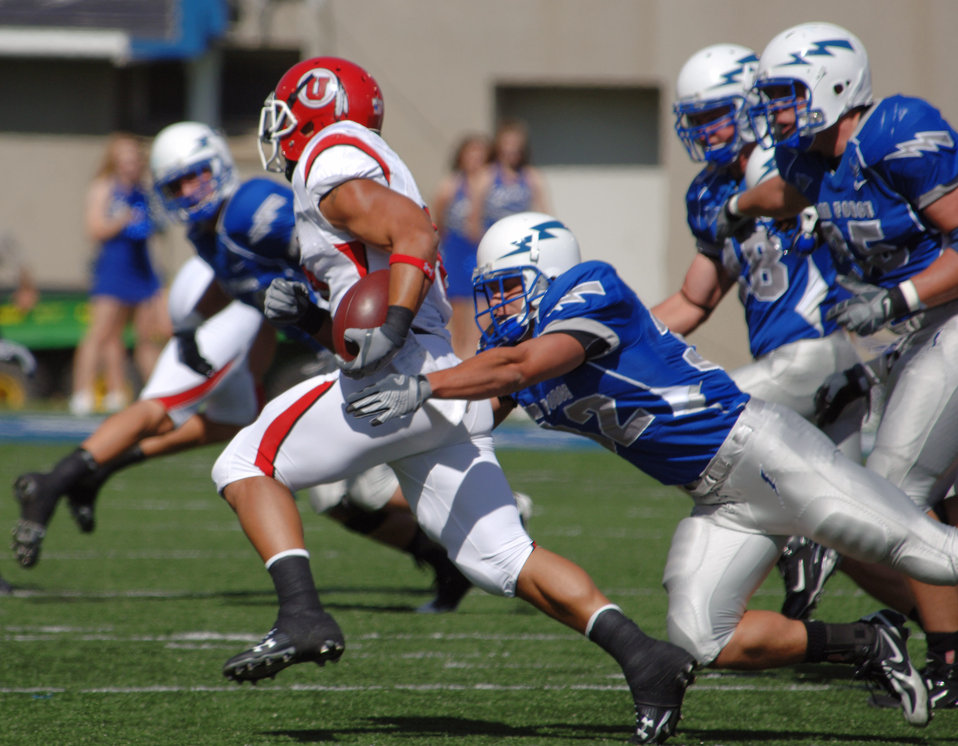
Football: Utah downs Air Force 30-23

U.S. Air Force Academy senior linebacker Hunter Altman tackles Utah running back Darrell Mack Sept. 20 at the Academy in Colorado. Altman ended the game with three tackles including this tackle for loss.